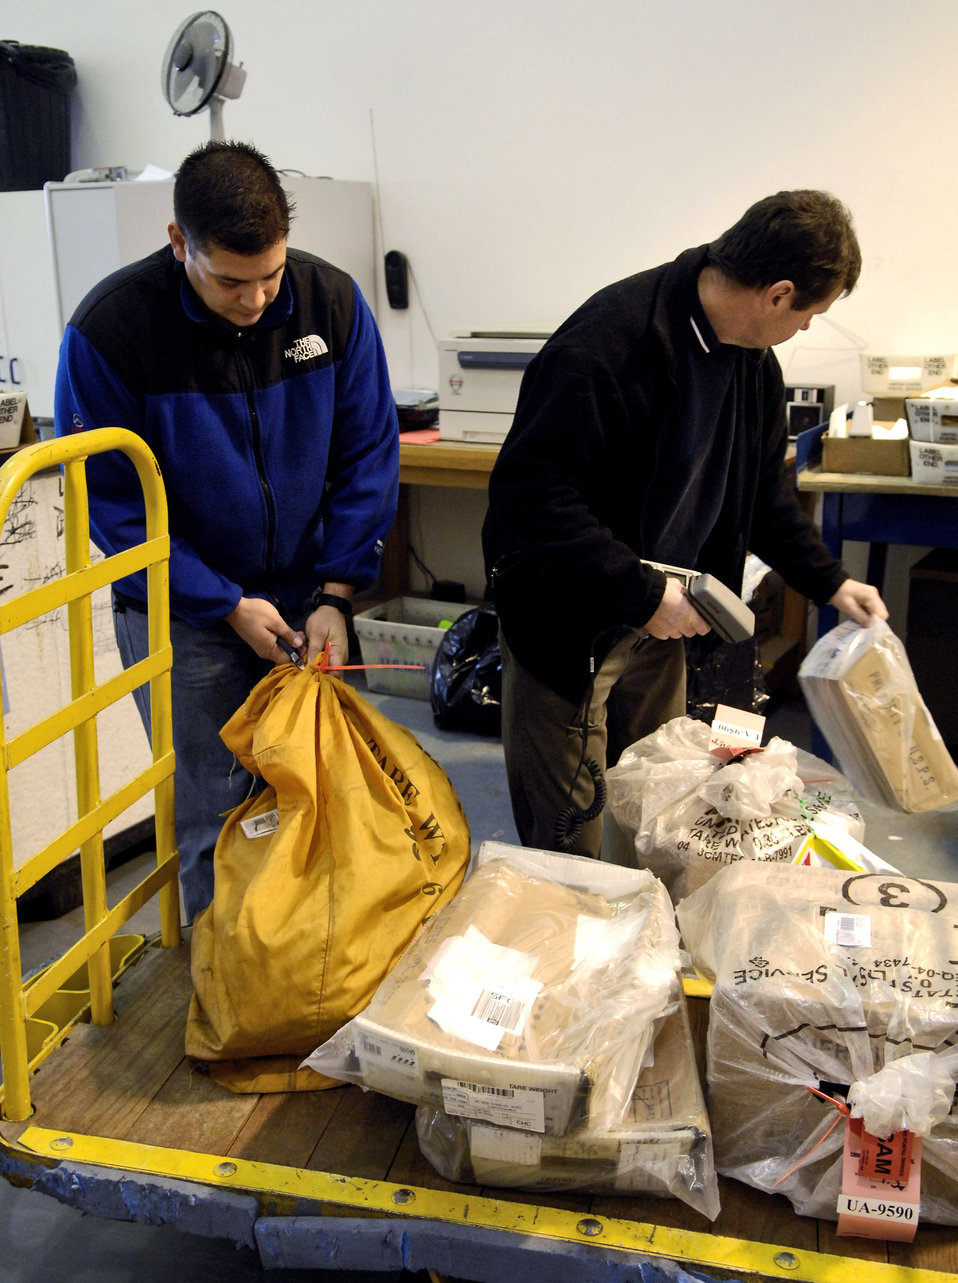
Neither snow nor deep freeze keep mail from Antarctica

Tech. Sgt. Chad Hartley and Dave Keenan sort mail for Operation Deep Freeze members Aug. 23 at Christchurch, New Zealand. Members of Det. 4, Pacific Air Forces Air Postal Squadron process all mail coming in and out of Antarctica and can handle up to 240,000 pounds of mail during Operation Deep Freeze. Sergeant Hartley is the incoming postmaster for Det. 4, and Mr. Keenan is a postal clerk.